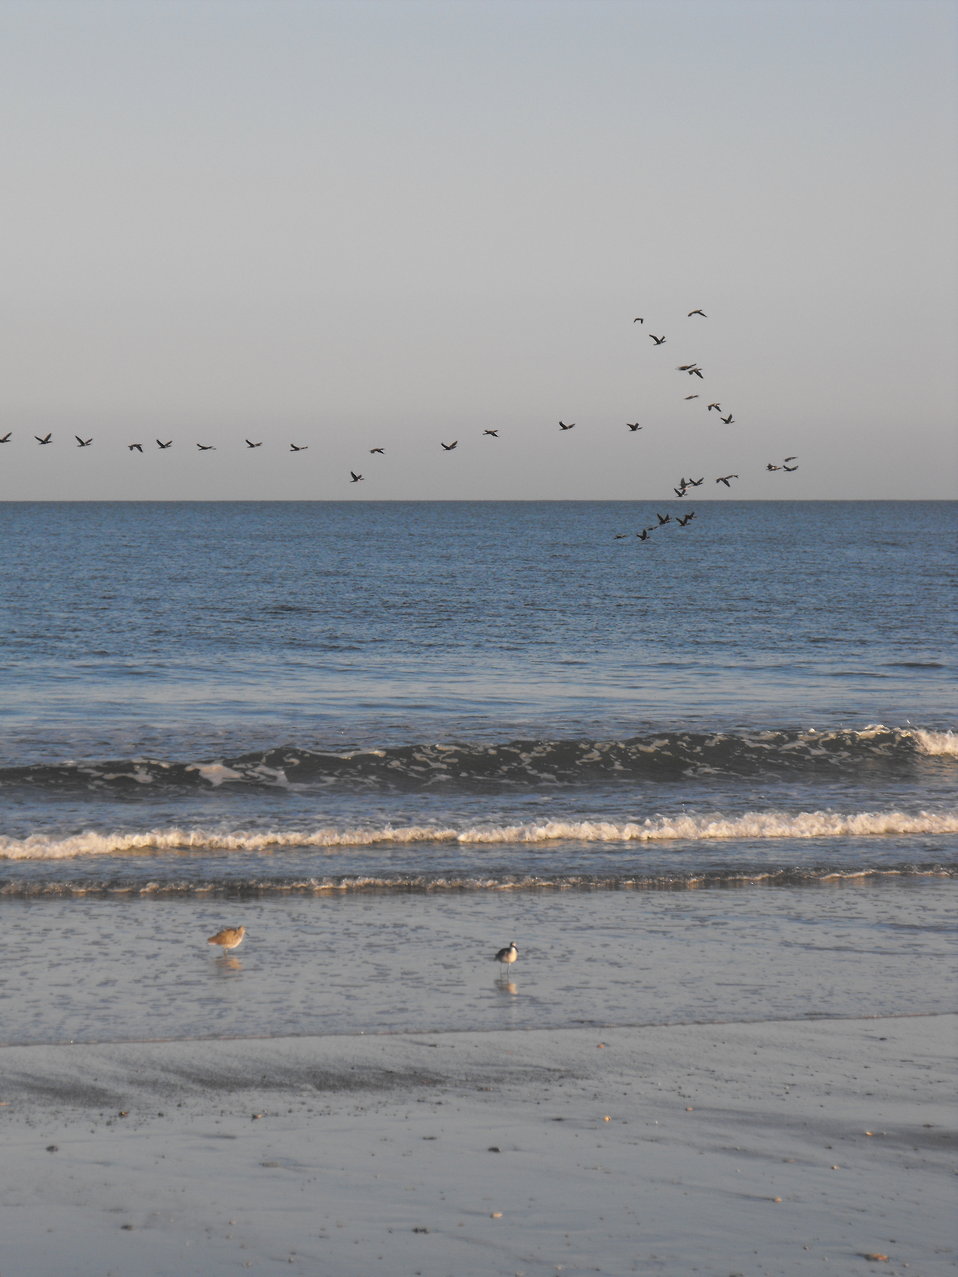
Migration over Wild Beach at Chincoteague National Wildlife Refuge / Assateague Island National Seashore.